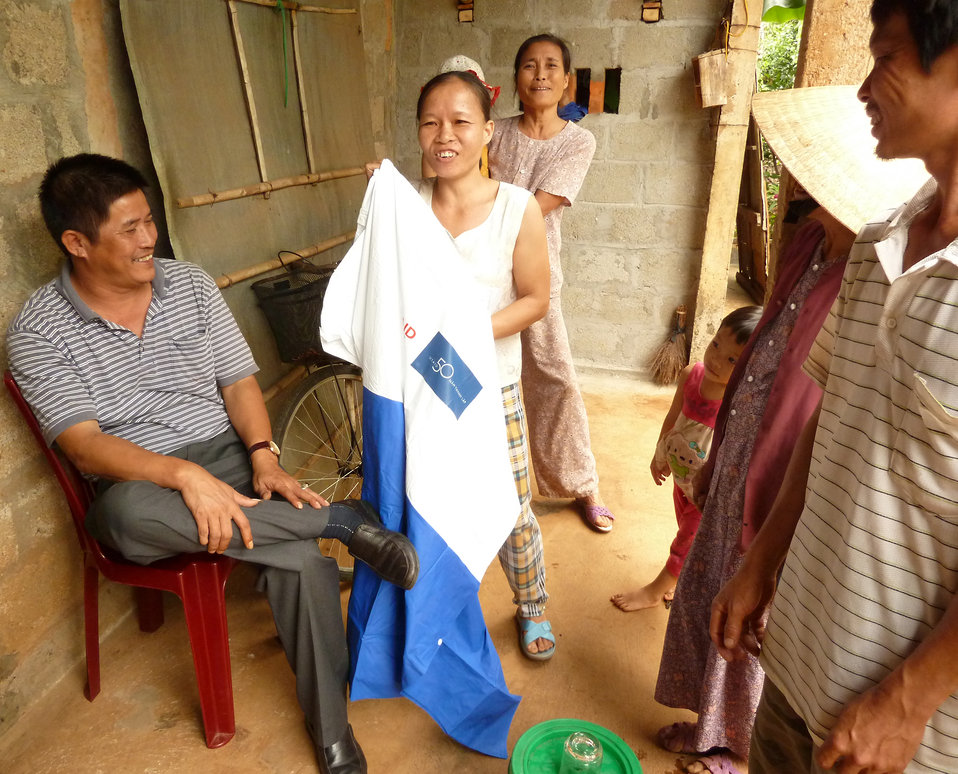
Animal health worker training in Quang Tri province